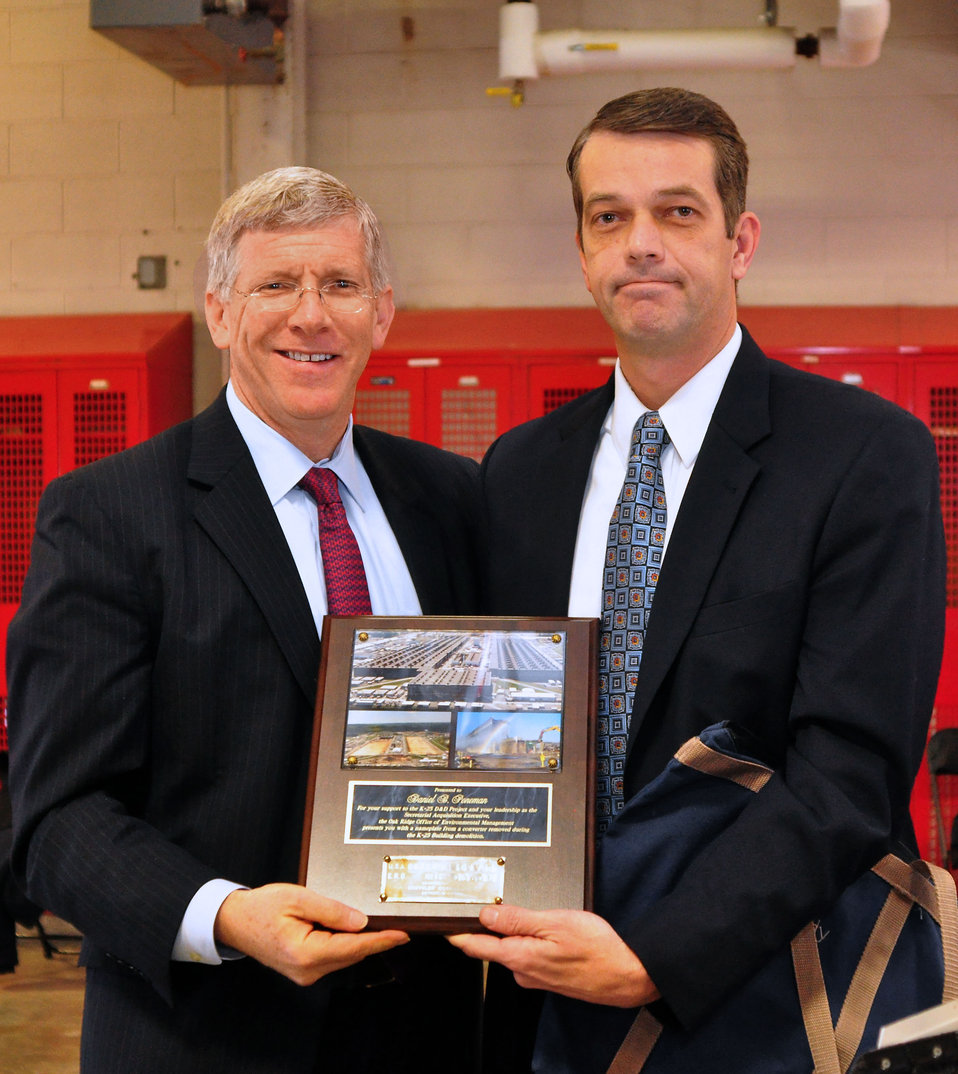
Last Part of K-25 Coming Down Oak Ridge 2013

13-157-1 DOE photo Lynn Freeny 12-19-2013 L to R Daniel Poneman Deputy Secretary of Energy & Mark Whitney DOE ORO EM Manager Oak Ridge Tennessee